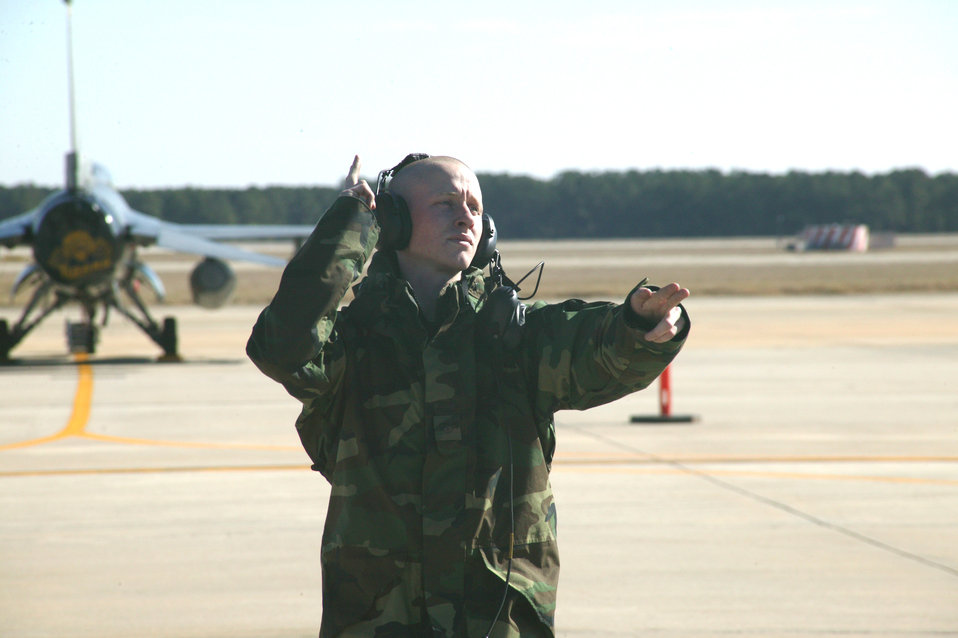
Crew chiefs make it happen

SHAW AIR FORCE BASE, S.C. (AFPN) -- Airman 1st Class Caleb Pangborn launches an F-16 Fighting Falcon. Airman Pangborn is a crew chief with the 79th Aircraft Maintenance Unit here.